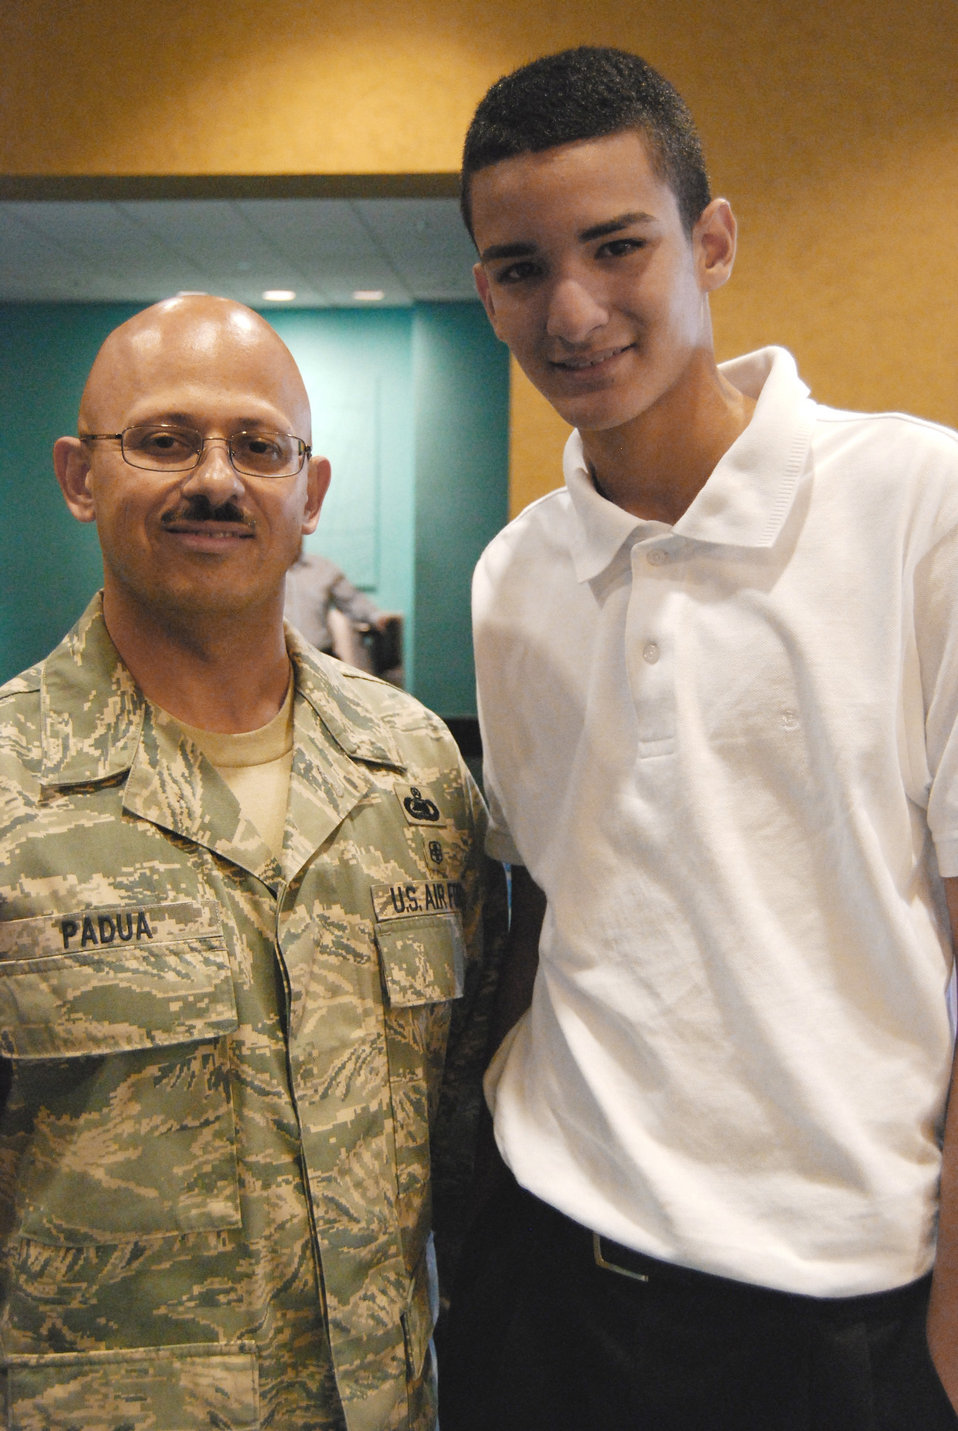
Human Resources Develop Council reaches out to community at LULAC

Master Sgt. Henry Sergeant Padua met Gerardo Garcia July 17 at the League of United Latin American Citizen convention and exposition in San Juan, Puerto Rico. As part of the outreach program, reservists spoke to more than 1,000 local high school and college students. LULAC is the oldest Hispanic civil rights organization in the U.S. Sergeant Padua is a first sergeant assigned to the 514th Maintenance Operations Flight at McGuire Air Reserve Base, N.J.